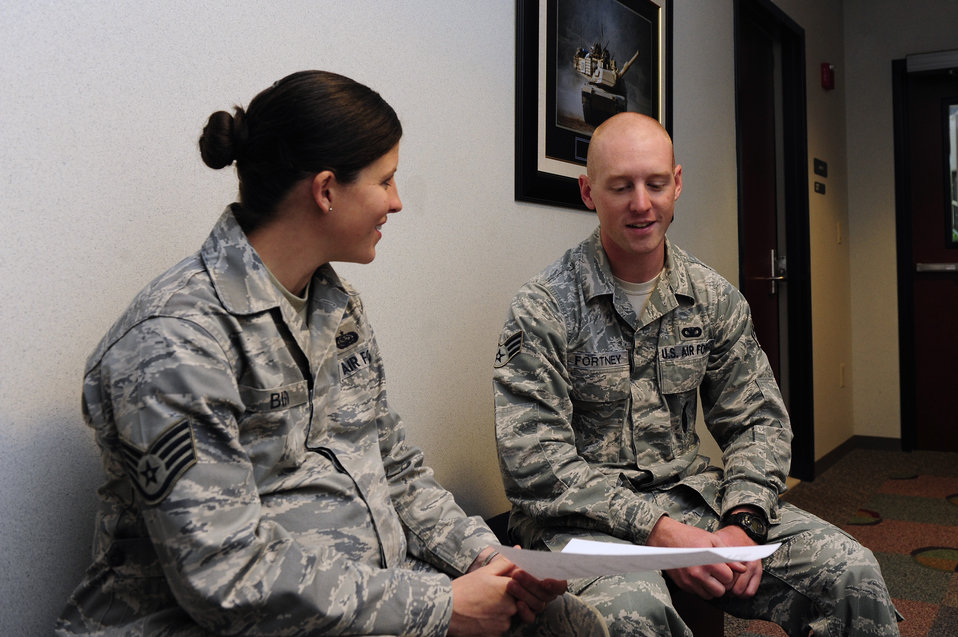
One-on-one counsel

Staff Sgt. Shelby Bird, left, counsels Senior Airman Joshua Fortney,after he finished his public speaking portion of the Airman Leardership Sschool course at Shaw Air Force Base, S.C., Oct. 22, 2012. Students are given an opportunity to speak with instructors one-on-one after their briefing in order to get candid-tailored guidance to help them improve their over-all leadership skills. Bird is the 20th Force Support Squadron ALS instructor and Fortney is a 20th Security Forces Squadron desk sergeant.